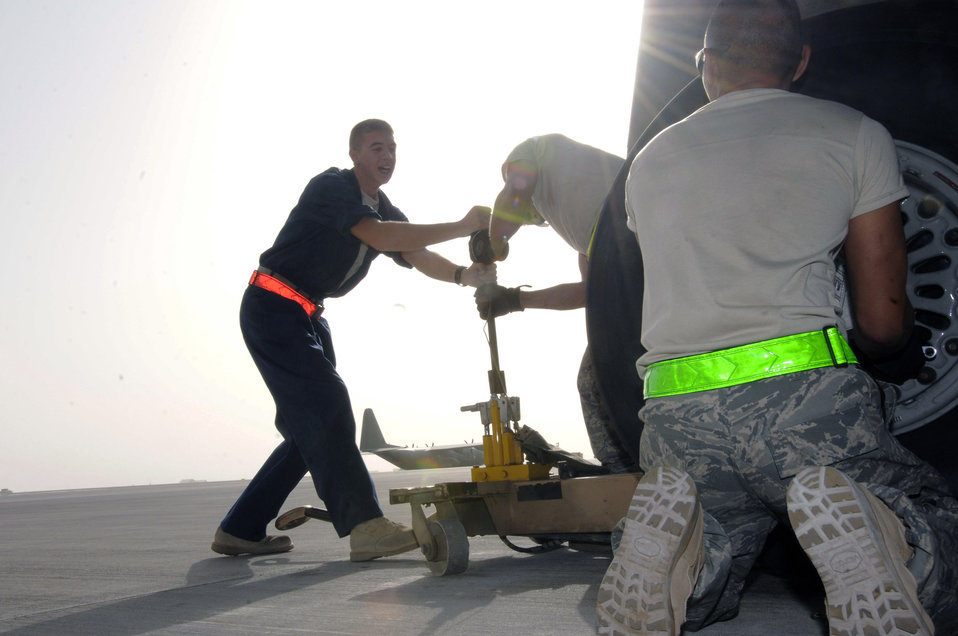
Brake it down

Tech. Sgt. Chris Reiter and Airman 1st Class Ryan McMillen team up on the jack lifting the more than 300,000 pounds of a KC-135 Stratotanker as Airman 1st Class James Giesick removes the dust cover Sept. 28 at an air base in Southwest Asia. The tire needed to be removed and the brake unit replaced after a crack in the heat shield was detected during a post-flight inspection. Sergeant Reiter is assigned to the 340th Aircraft Maintenance Unit. He is a native of Farmington, N.M., is deployed from Fairchild Air Force Base, Wash. Airman Giesick is from San Diego and deployed from Grand Forks AFB, N.D. Airman McMillen is a native of Warsaw, Ill., and deployed from McConnell AFB, Kan. They are assigned to the 340th Aircraft Maintenance Unit.